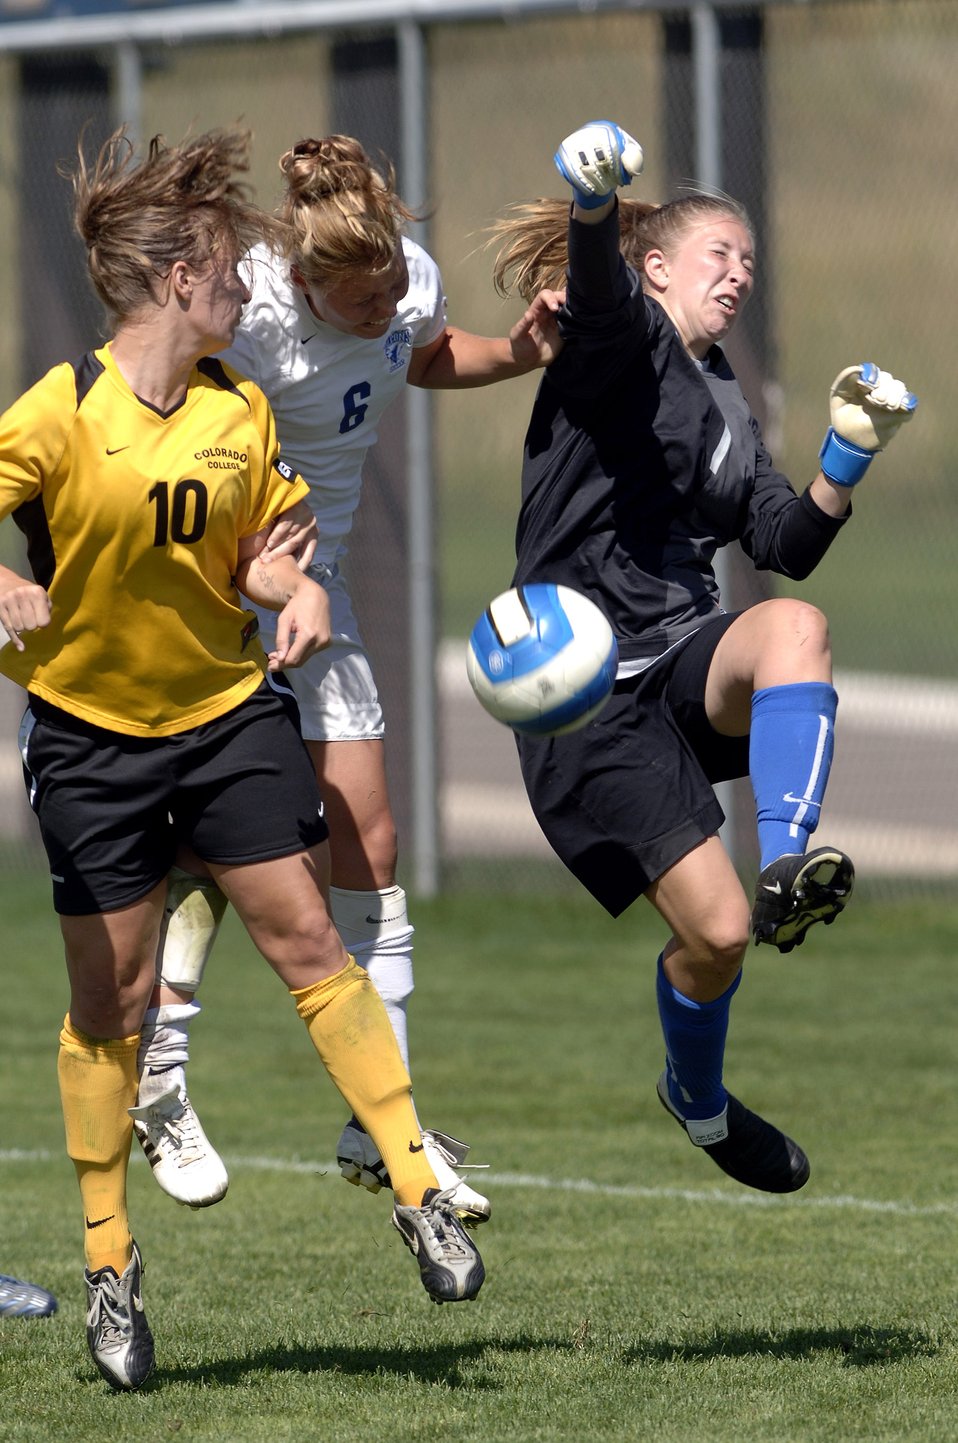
Academy soccer

Goalkeeper Cadet 2nd Class Erin Wallace and Cadet 2nd Class Rachel Emory successfully clear the ball during a women's exhibition soccer match Aug. 26 against Colorado College at the U.S. Air Force Academy in Colorado Springs, Colo. Colorado College defeated Air Force, 2-0.